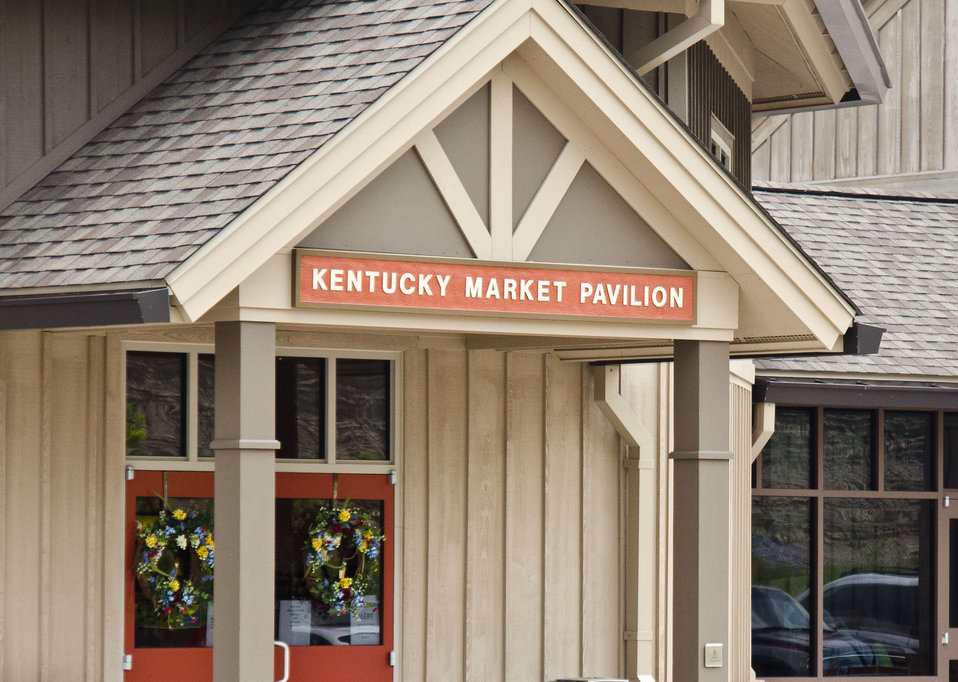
Kentucky Market Pavilion entrance to the Bath County Agricultural Education and Marketing Center, Owingsville, KY, on Friday, July 15, 2011. The Center was the recipient of a $400,000 Rural Business Enterprise Grant. It has given farmers and producers from Bath and surrounding counties the opportunity to manufacture and market their locally grown and locally produced value-added and “Kentucky Proud” branded products, including but not limited to, fresh produce, artisan crafts and specialty food products. The Center is open year-round and allow residents to sell products in four different retail categories, including Kentucky products, regional crafts, “green” groceries and bakery/deli. Several producers expressed their gratitude for Rural Development’s assistance in making the center a reality. The project was made possible through American Recovery and Reinvestment Act of 2009 funding enacted by the 111th United States Congress in February 2009 and signed into law on February 17, 2009, by President Barack Obama.